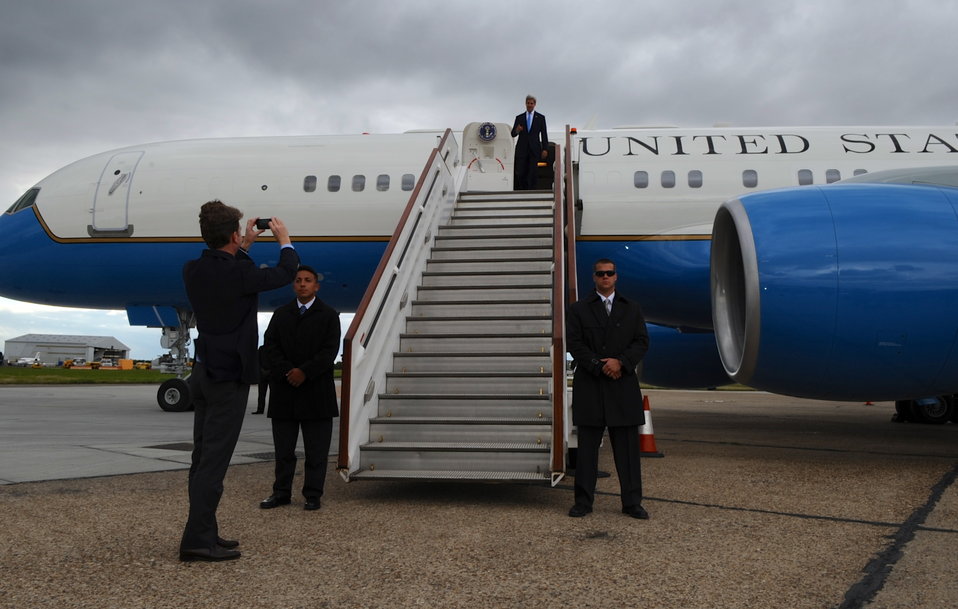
Secretary Kerry Arrives in the United Kingdom

U.S. Ambassador to the United Kingdom Matthew Barzun takes a cellphone picture of U.S. Secretary of State John Kerry as he arrives at in London, United Kingdom on September 8, 2013.